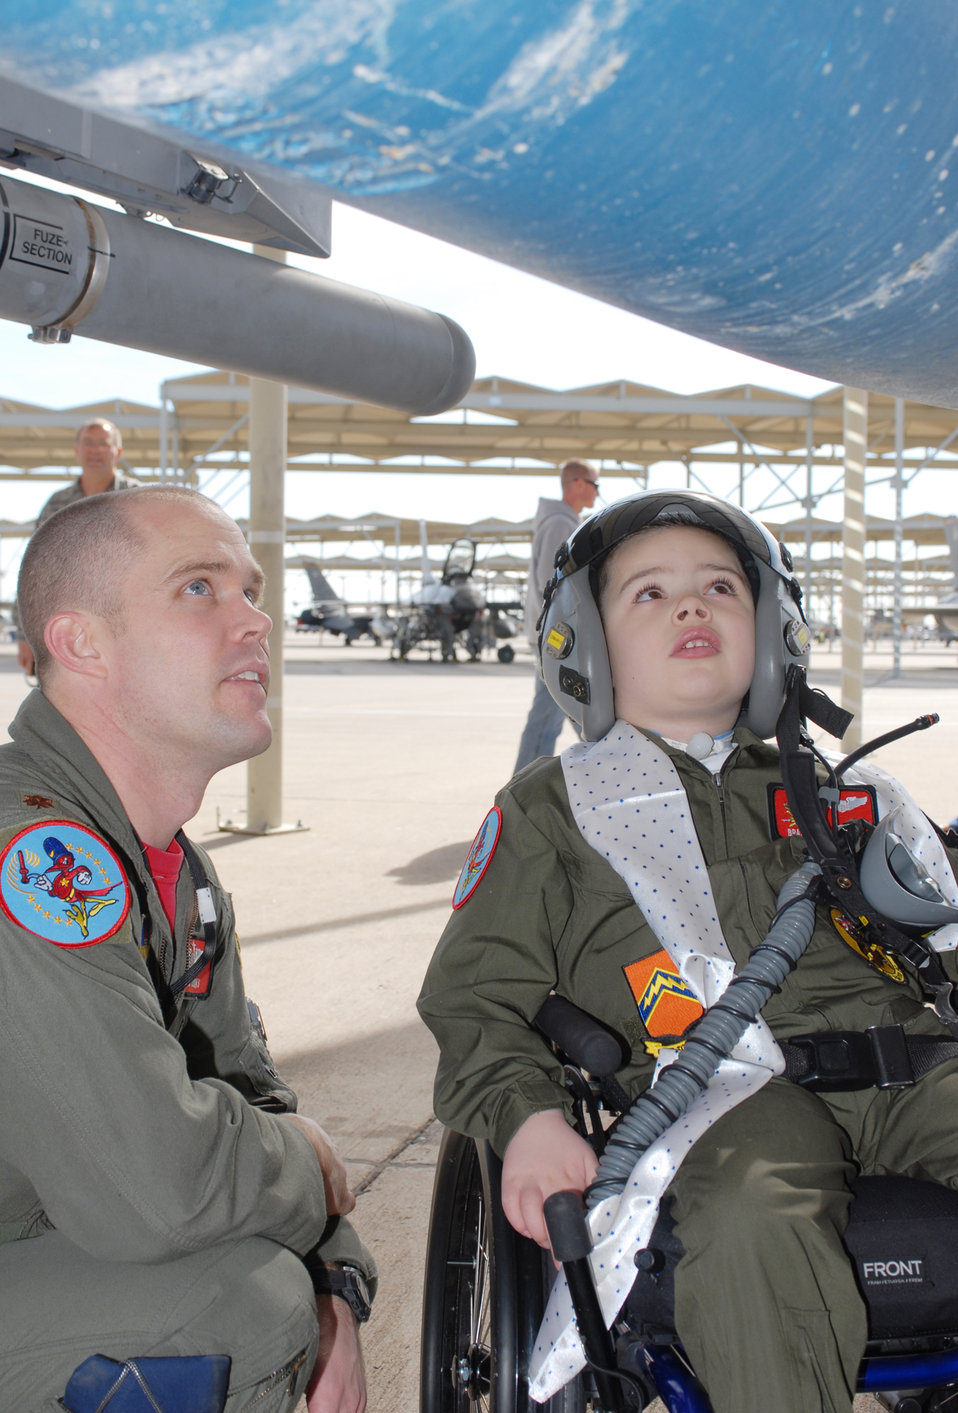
Pilot for a day visits 56th Training Squadron

Maj. Bryan Unks shows Brandon